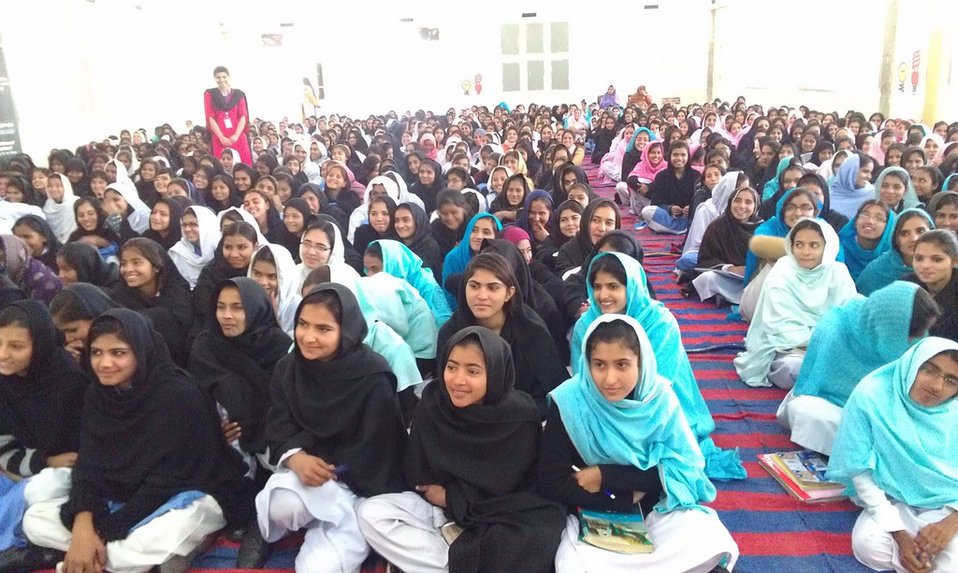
USAID Power Distribution Program-Energy Conservation Seminar at Govt. Comprehensive Girls Higher Secondary School, Multan.

Multan, January 28, 2013 - the USAID Power Distribution Program with the collaboration of MEPCO, held an Energy Conservation Seminar at Govt. Comprehensive Girls Higher Secondary School, Multan.
The purpose of the seminar was to:
• Inform students about the USAID Power Distribution Program and the role of Distribution companies in Pakistan.
• Educate students and teachers about the effective energy saving methods they can apply at homes, schools and workplaces.
More than 2000 students along with principal & teachers attended the seminar & participated actively in the quiz session